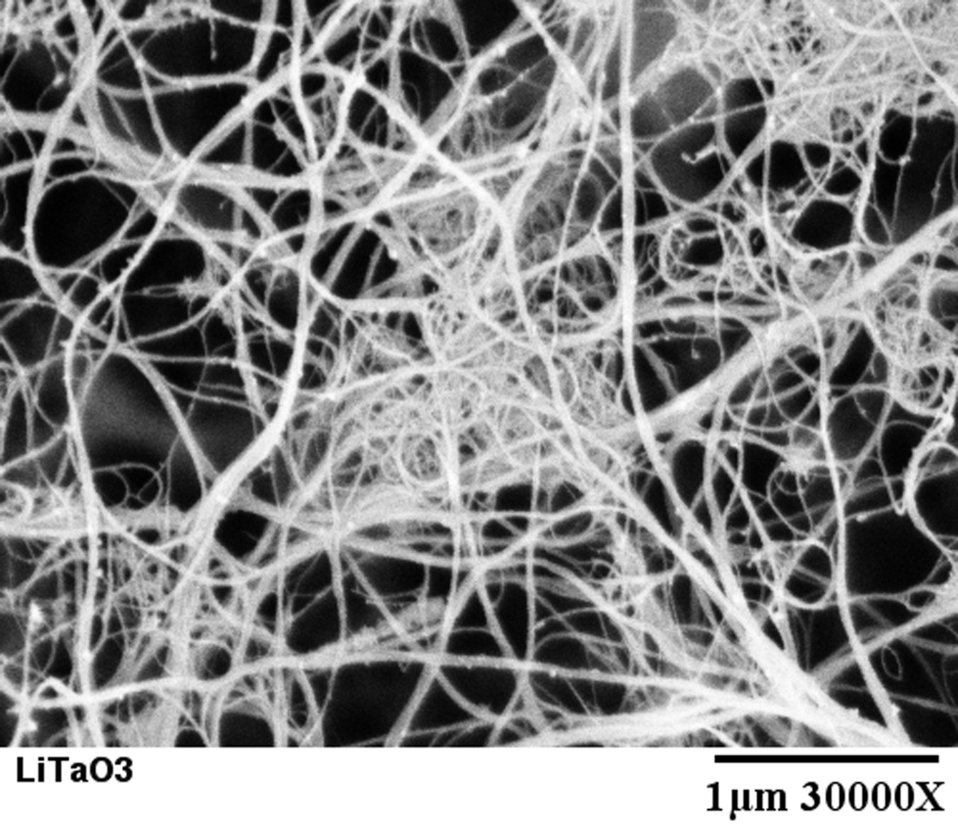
NIST Laser-Based Method Cleans Up Grubby Nanotubes

An after microscope image of a pyroelectric detector coated with single-walled nanotubes (SWNTs) visually demonstrate the effect of the laser cleaning process. The SWNTs look visibly blacker after laser treatment, suggesting less graphitic material and increased porosity. .